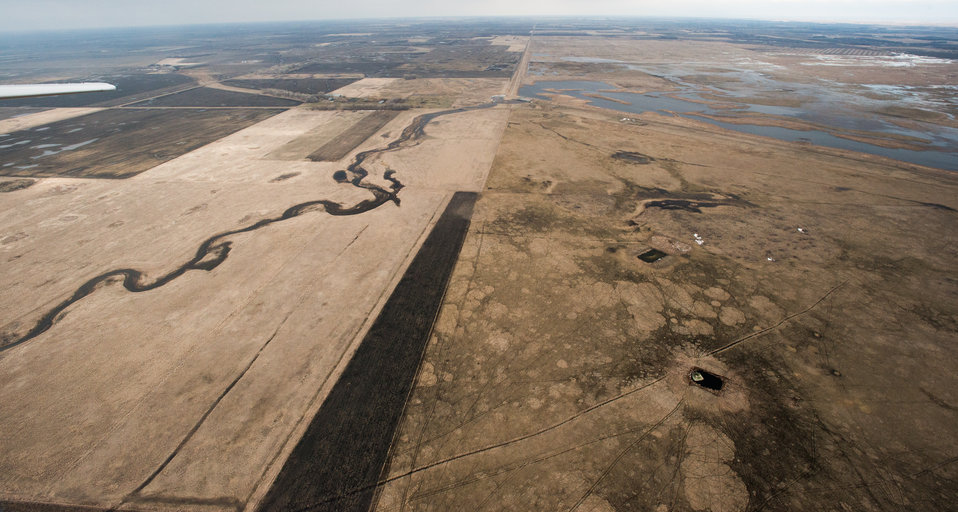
English Coulee Watershed Dam, a Public Law PL83-566 Small Watershed Program, in Grand Forks County, ND, on Tuesday, April 30, 2013.